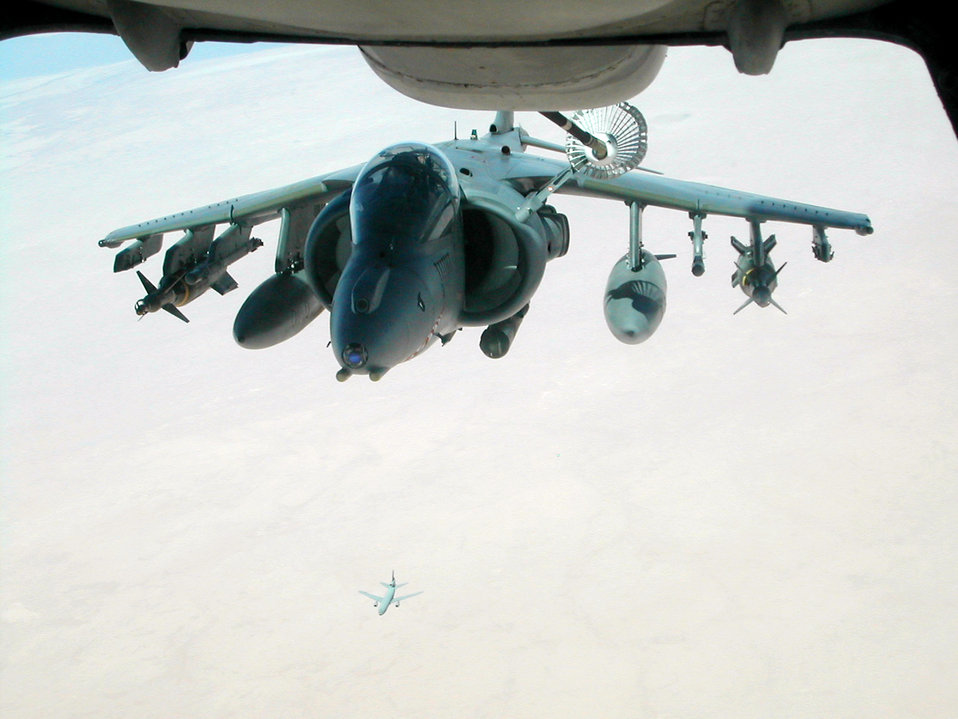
Gas and go

A KC-10 Extender assigned to the 380th Air Expeditionary Wing refuels an AV-8 Harrier recently while another KC-10 flies below it. The 380th AEW is the largest air refueling unit in the Middle East and comprises KC-10s and KC-135 Stratotankers.